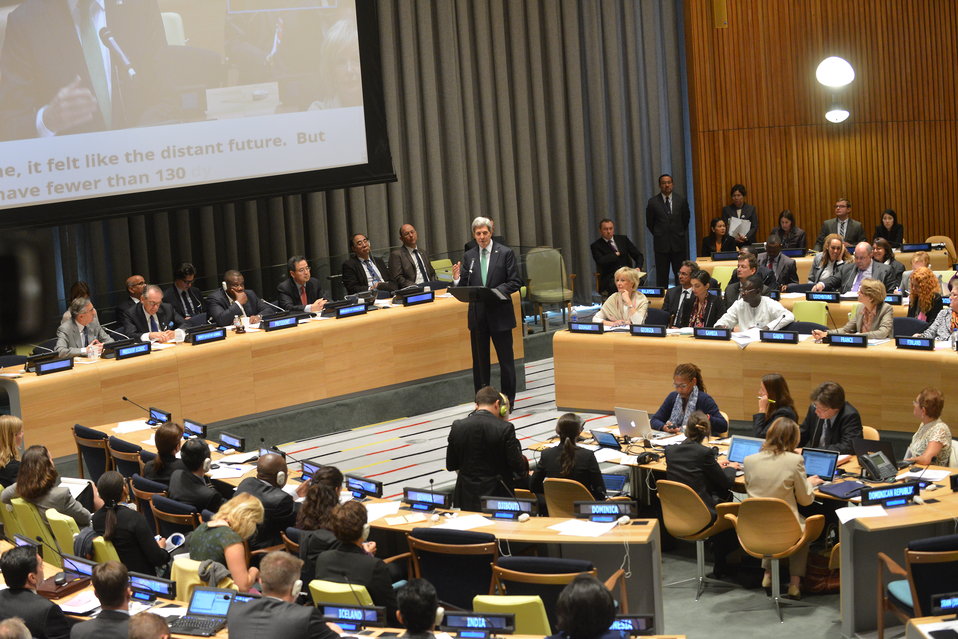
Secretary Kerry Participates in the Millennium Development Goals Event

U.S. Secretary of State John Kerry participates in the Millennium Development Goals Event hosted by the United Nations General Assembly at the United Nations in New York City on September 25, 2013.